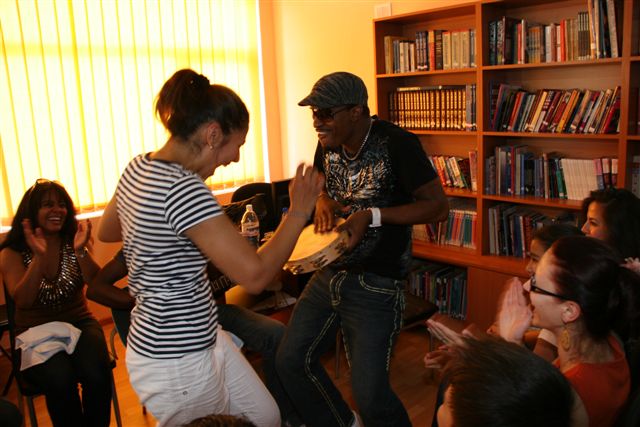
The Melvin Williams Group dances with visitors at the newly renovated American Corner in Turkmenabat, Turkmenistan, on June 22, 2011. The Melvin Williams Group is visiting Turkmenistan from June 21-26, 2011, as part of the U.S. Embassy’s annual American Culture Days celebration.